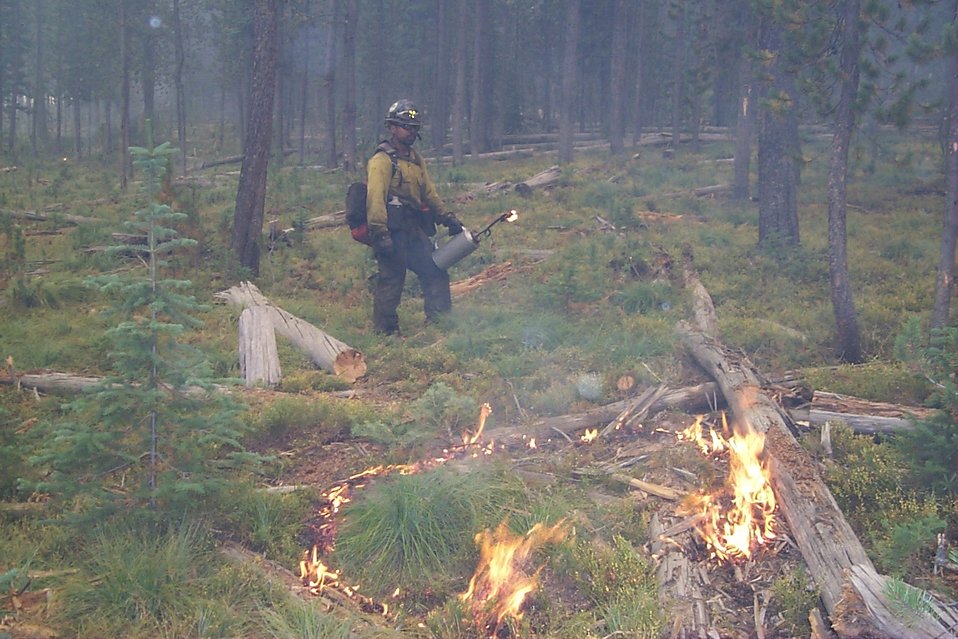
Controlled burn Fire Clearwater Fire Salmon Field Office USRD Upper Snake River District